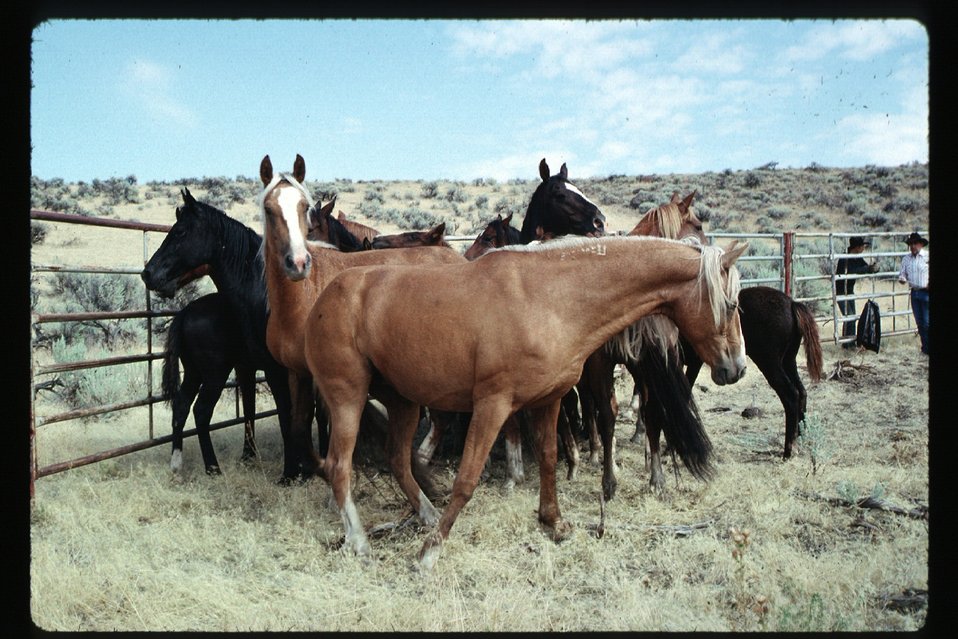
Wild Horse and Burro Gathering or roundup LSRD Lower Snake River District